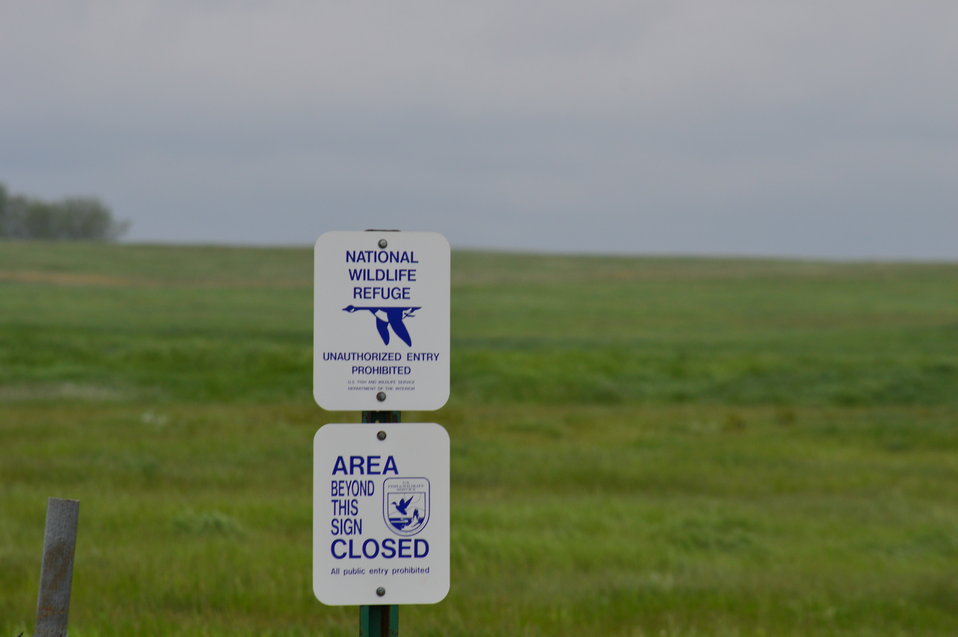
NWR sign

Scenery and wildlife at Lake Ilo National Wildlife Refuge in North Dakota.